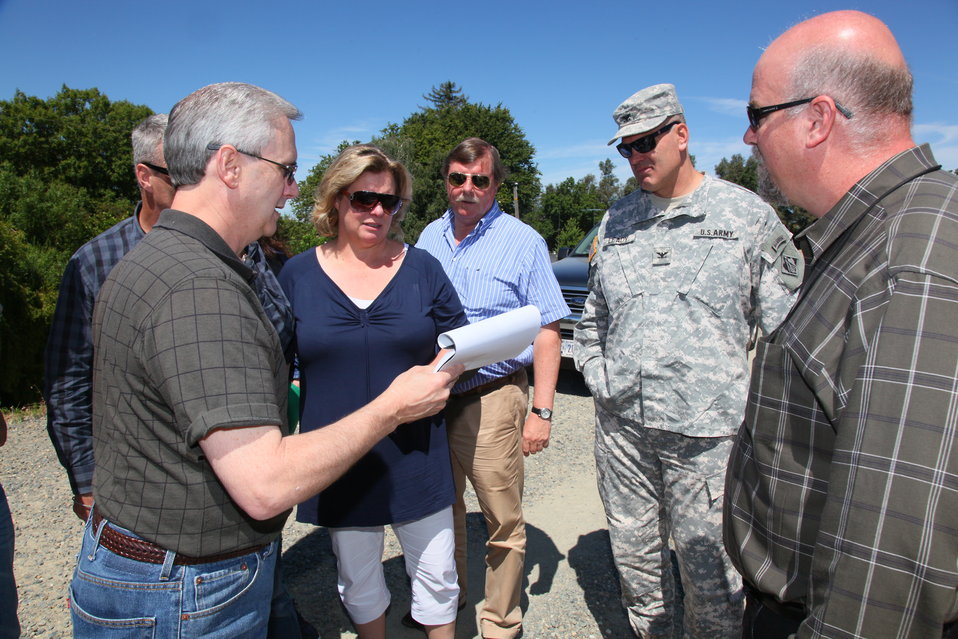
Dutch delegates tour District levees and Folsom project

Dave McDaniels (left) program manager for the U.S. Army Corps of Engineers Sacramento District, discusses Sacramento’s historical flooding issues with a Dutch delegate June 26, 2012 during an American River levee tour near Sacramento, Calif. McDaniels, Dan Tibbets (right) and District Commander Col. Bill Leady (second from right) provided levee tours to visiting Dutch delegates from the Ministry of Transport, Public Works and Water Management who were here to learn more about the Corps’ flood risk reduction missions around Sacramento.